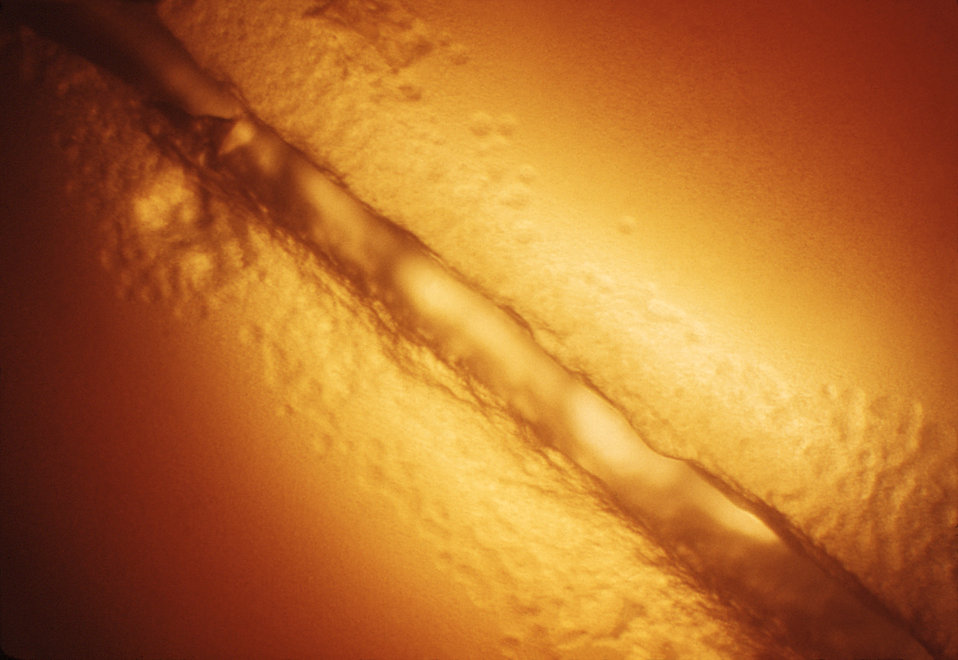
Magnified 100X, this image depicted a Petri dish filled with trypticase soy agar medium containing 5% defibrinated sheep's blood, i.e., blood agar plate (BAP). After having been inoculated by stabbing the surface of the BAP with a non-hemolytic group A Streptococcus pyogenes (GAS) bacteria. The BAP was incubated in a carbon dioxide enriched atmosphere at 35oC for 24 hours. The culture grew bacterial colonies along the stab in the BAP. There are no clear characteristic color changes in the region surrounding the stabbed area of the BAP in which the red blood cells in the blood agar medium have been altered to some extent. This "hemolyzed zone" indicated that these bacteria appear more like alpha- or WZ-alpha colonies in nature, which means that stabbing the BAP with non-hemolytic GAS is not helpful in the identification of the non-hemolytic variants of GAS.